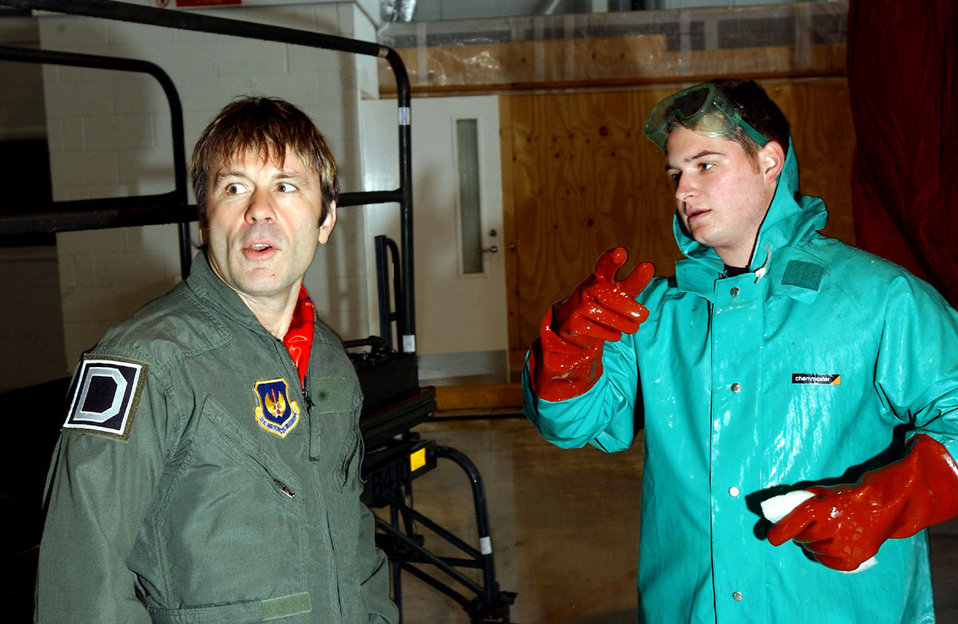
A 'Maiden' voyage

ROYAL AIR FORCE MILDENHALL, England -- Airman 1st Class John Acosta (right) talks with Bruce Dickinson during a visit here Oct. 25. Mr. Dickinson is lead singer of the heavy metal band Iron Maiden and also a commercial airline pilot. He is the host of a five-part series for the Discovery Channel titled,